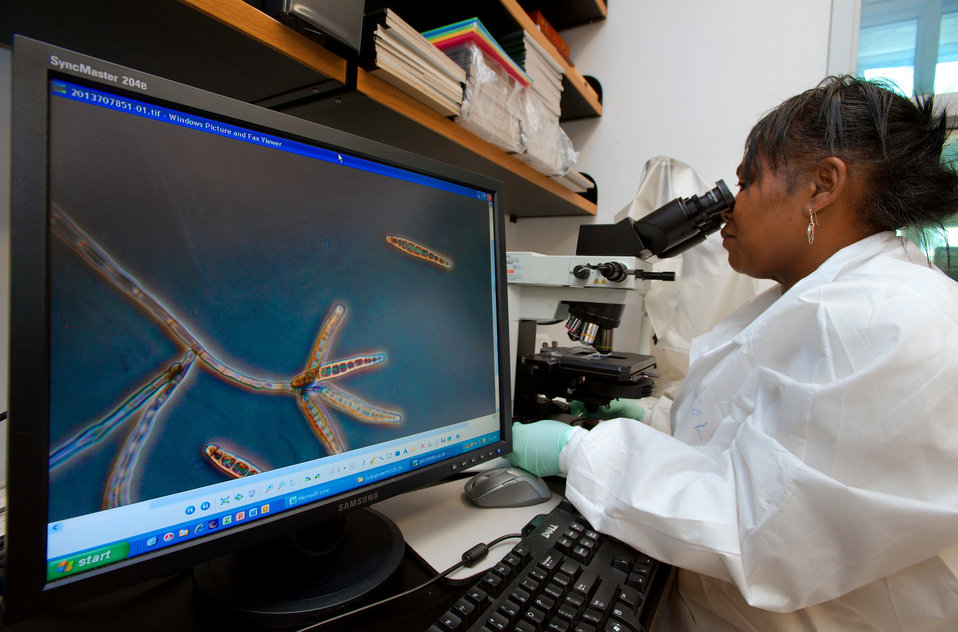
This image shows Centers for Disease Control and Prevention (CDC) scientist Carol Bolden examining microscopic slides showing Exserohilum rostratum (see on computer screen) during the 2012 multistate fungal meningitis outbreak investigation.